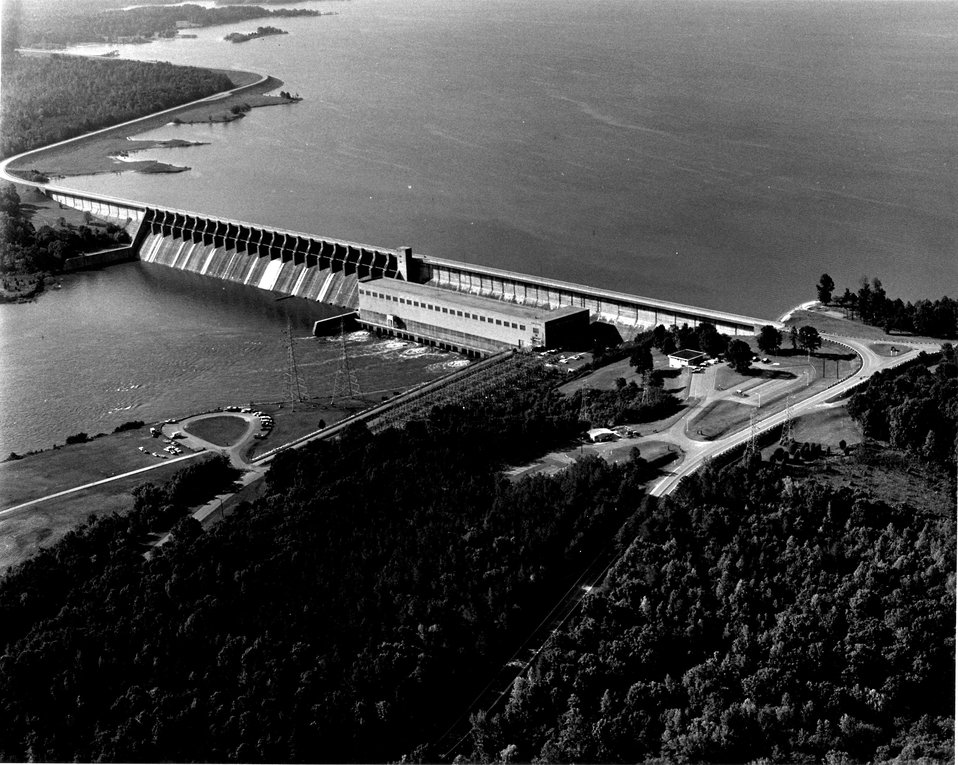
Kerr Dam & Reservoir, Virginia. c. undated